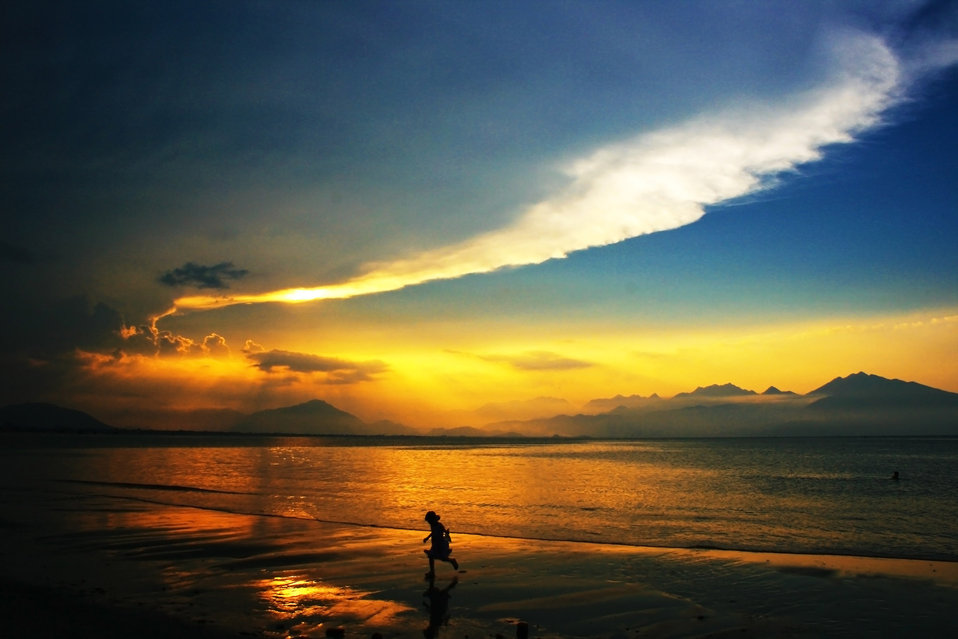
Childhood memories #1

Sunset on the bay of danang, central vietnam..